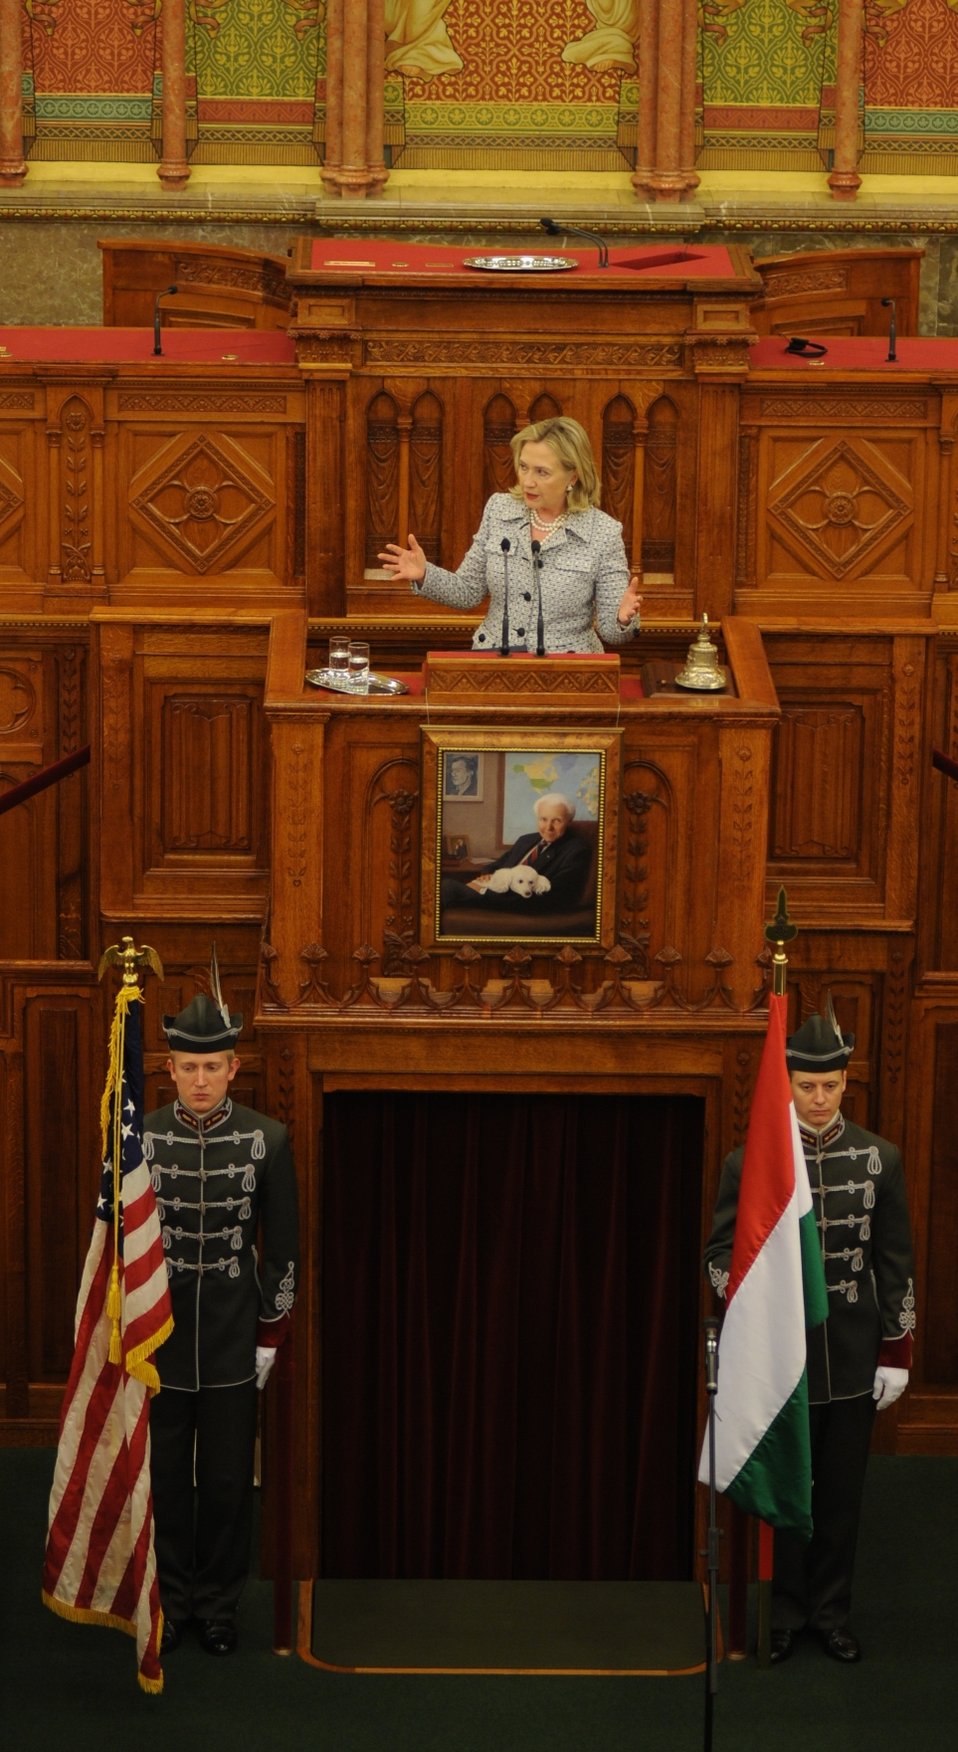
Secretary Clinton Delivers Her Speech During the Inauguration of the Tom Lantos Institute

U.S. Secretary of State Hillary Rodham Clinton delivers her speech during the inauguration of the Tom Lantos Institute in Budapest, Hungary, June 30, 2011.